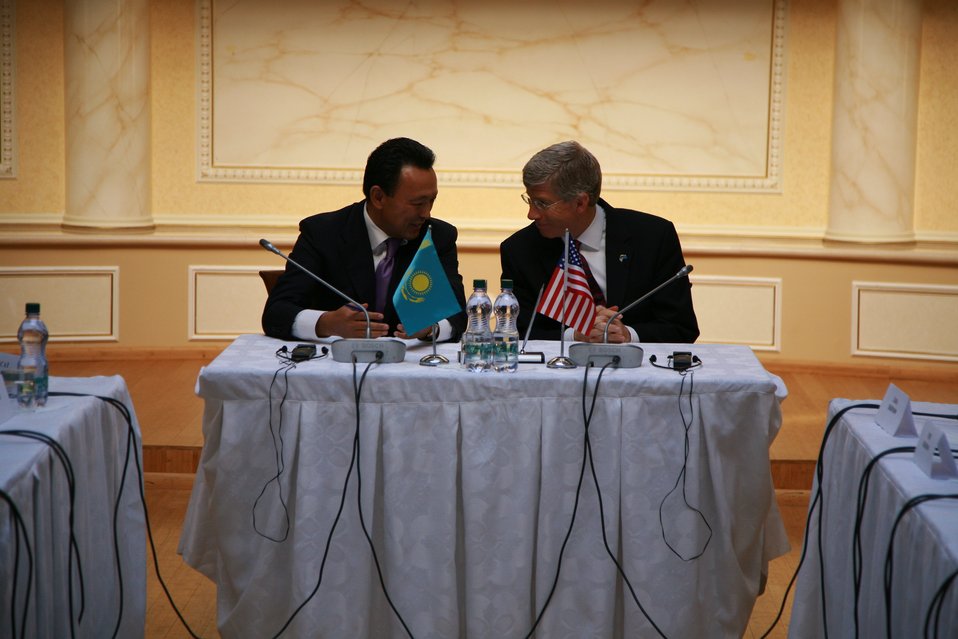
Kazakhstan 4